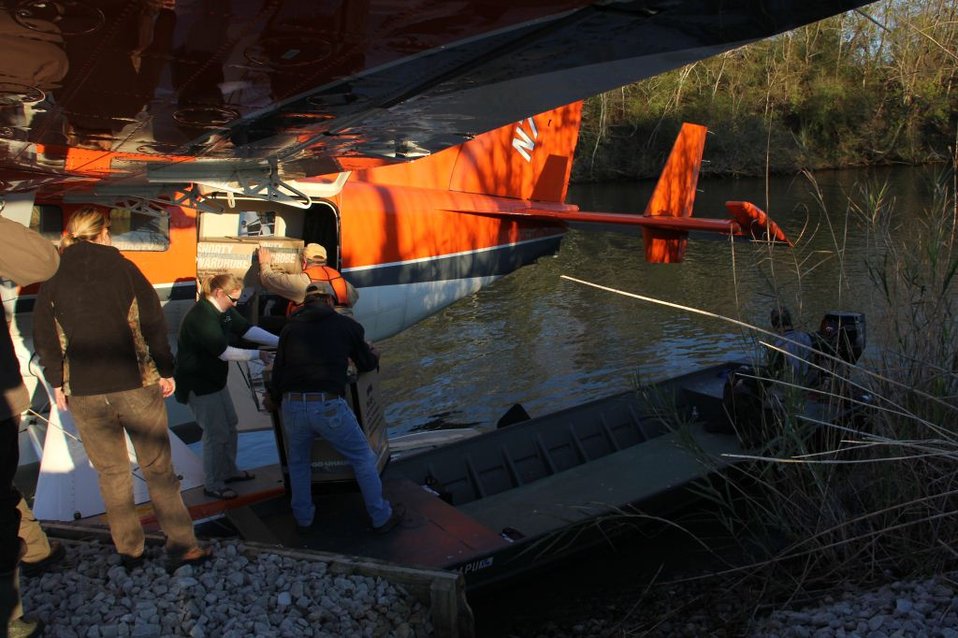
Unloading Second Whooping Crane Cohort

Unloading the second whooping crane cohort flown from the Patuxent Wildlife Research Center (PWRC) in Laurel, MD, in their individual transport boxes, from the plane onto a boat for the final leg of their journey to the White Lake Wetlands Conservation Area (WLWCA) in Louisiana (December 2011).